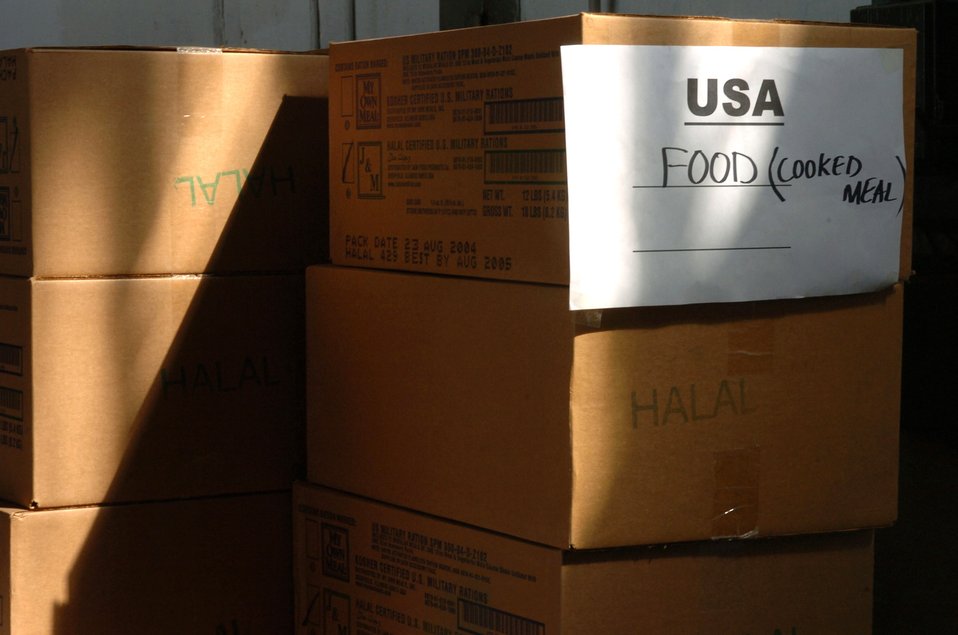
Operation Enduring Freedom

CHAKLALA, Pakistan -- Boxes of emergency rations donated by the United States are stacked in a hanger at Pakistani air force base here Oct. 12, awaiting transportation by helicopter to remote villages in the region. The Department of Defense is participating in the multinational effort to provide humanitarian assistance and support to Pakistan and parts of India and Afghanistan following a devastating earthquake.